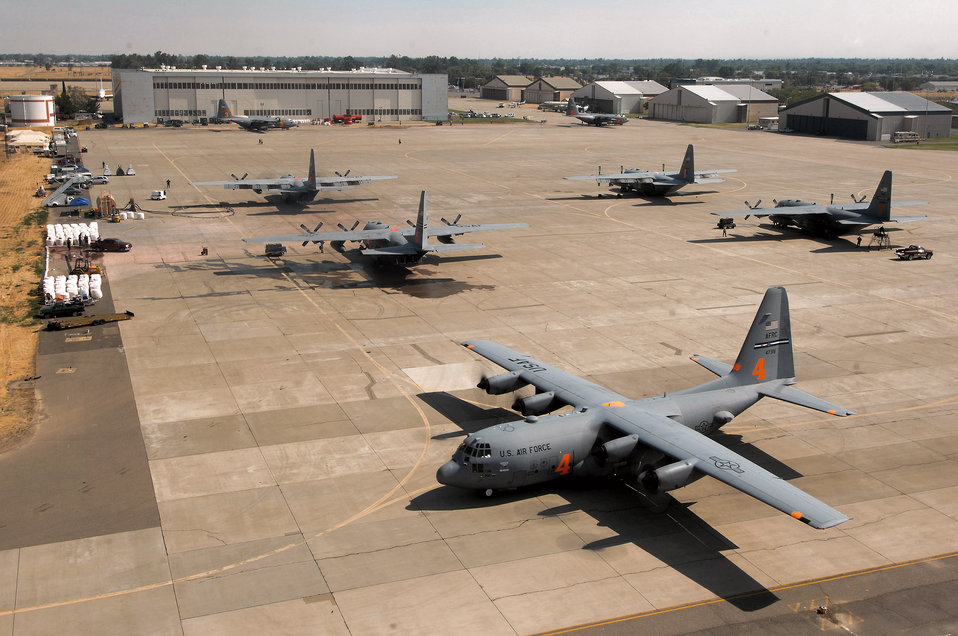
302nd AEG continues aerial firefighting opns in California

A C-130 Hercules from the Air Force Reserve Command's 302nd Airlift Wing at Peterson Air Force Base, Colo., equipped with the modular airborne firefighting system, taxies to the runway at McClellan Airfield, Calif., July 5 to begin firefighting operations. Aircraft from the 302nd AW are conducting firefighting support missions as part of the 302nd Air Expeditionary Group.